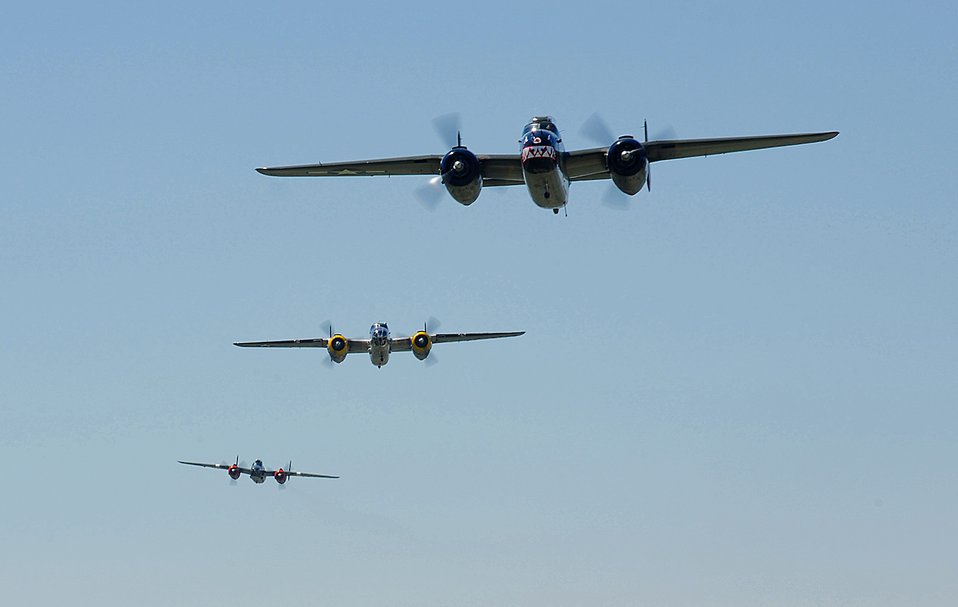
B-25 Mitchells fly again

B-25 Mitchell bombers fly above the National Museum of the U.S. Air Force at Wright-Patterson Air Force Base, Ohio, April 18, 2010. The flight commemorated Lt. Col. Jimmy Doolittle's squad of 16 B-25s that bombed targets in Japan as a response to the attack on Pearl Harbor.